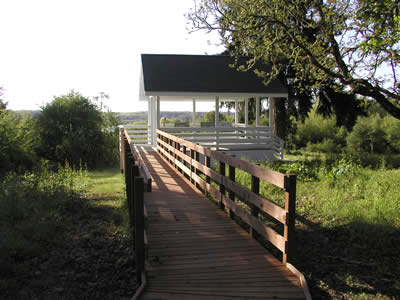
Cabell overlook - William L Finley NWR